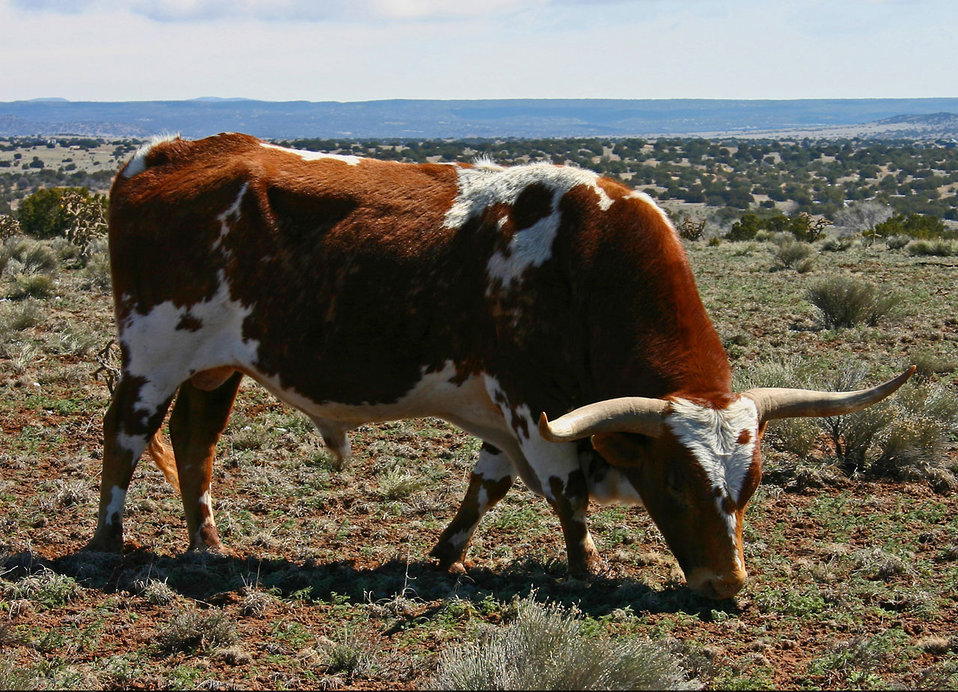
Some bull

Bull grazing on short pasture grass.